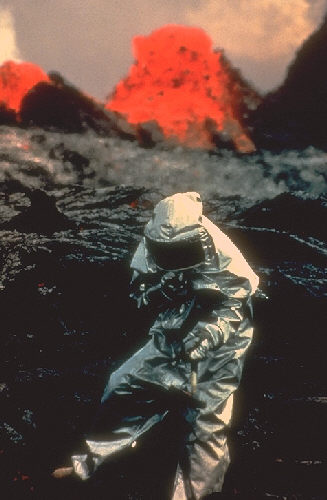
Scientist studying volcano.